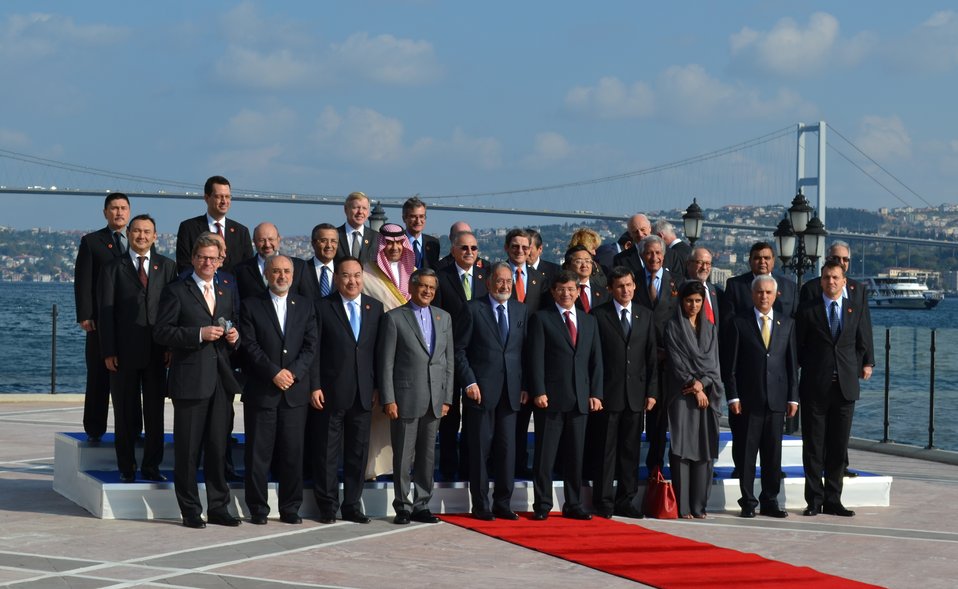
Deputy Secretary Burns and Special Representative Grossman Pose for a Family Photo With Delegation Leaders

U.S. Deputy Secretary of State William J. Burns joins a family photo session of all heads of delegations, including U.S. Special Representative for Afghanistan and Pakistan Ambassador Marc Grossman, at the Istanbul Conference for Afghanistan in Istanbul, Turkey, on November 2, 2011.